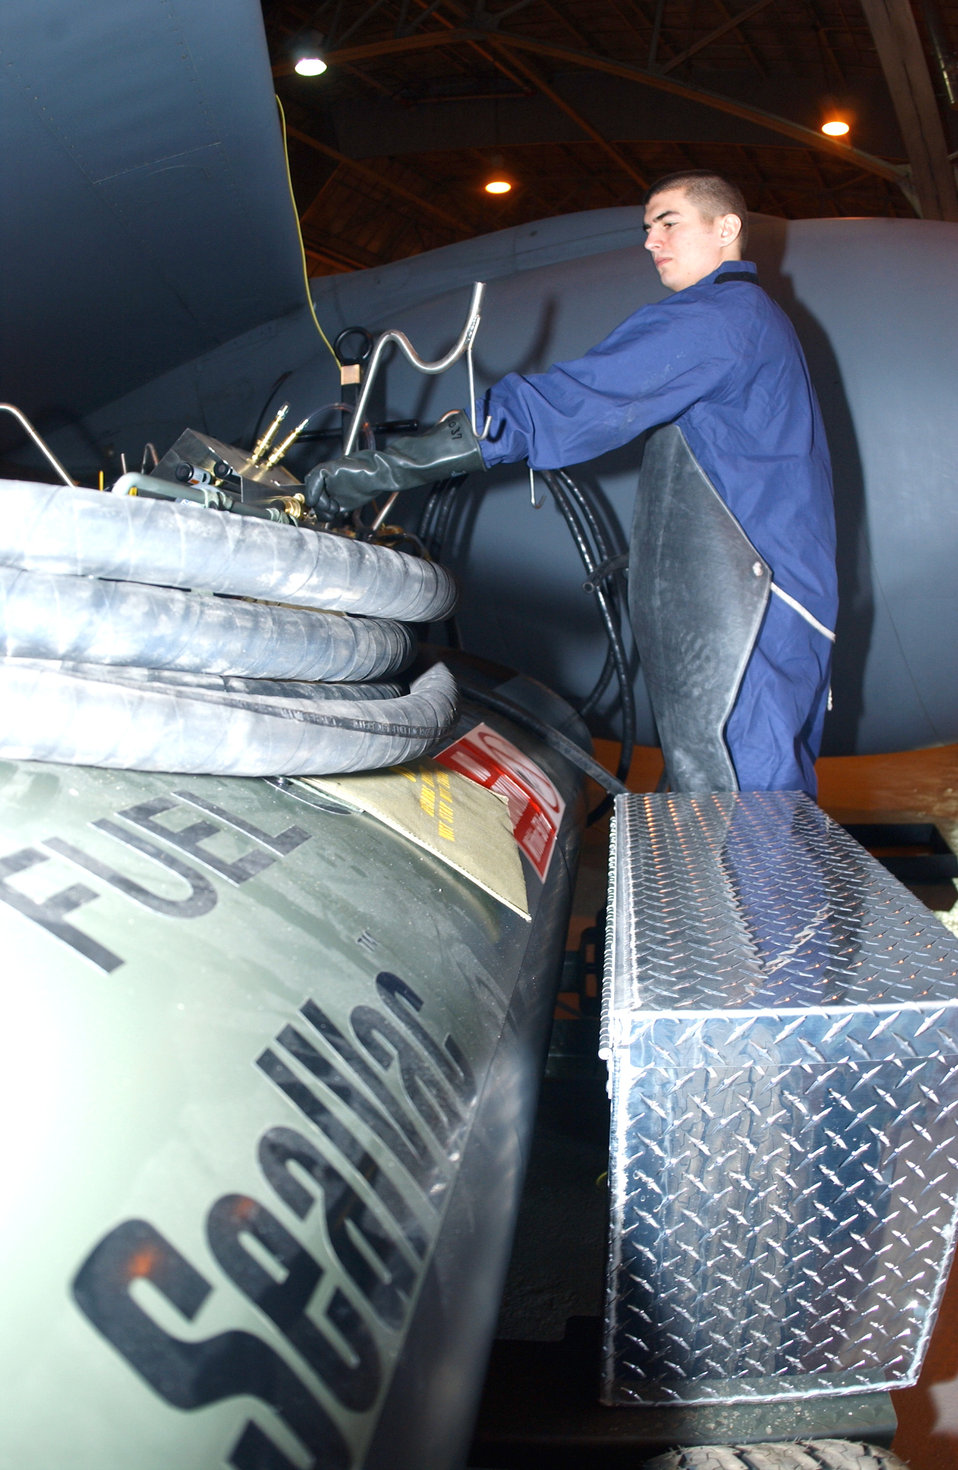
Bowsers make draining KC-135s more efficient

FAIRCHILD AIR FORCE BASE, Wash. -- Senior Airman Nicholas Hamstra applies vacuum pressure to drain fuel from a KC-135 Stratotanker. The fuel bowser allows multiple tanks to be drained safer and quicker than the old draining method. Airman Hamstra is a fuel systems journeyman with the 92nd Maintenance Squadron here.